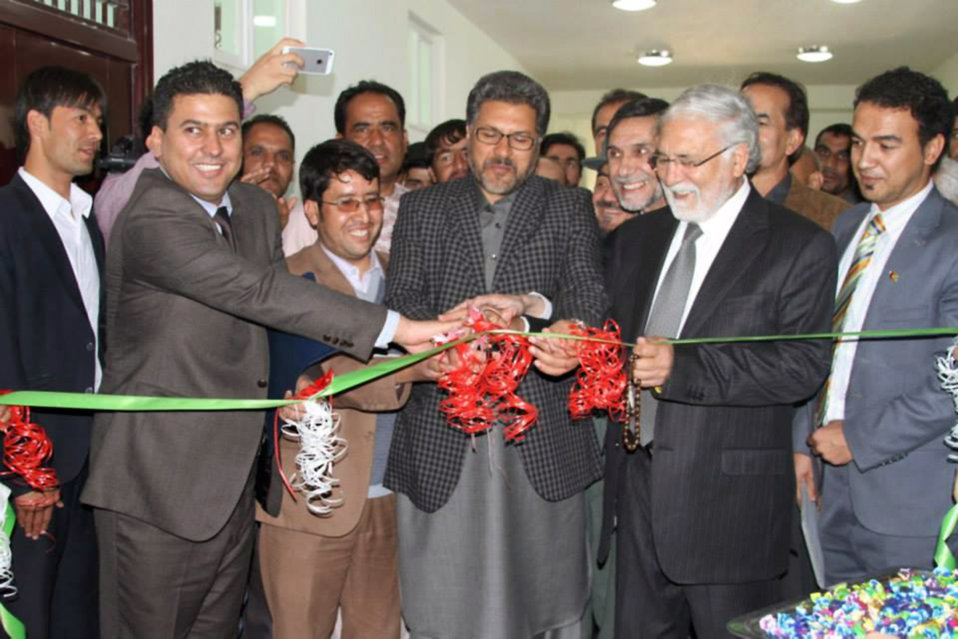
Herat Teacher Training Institute Inauguration

The ribbon cutting ceremony for the inauguration of the new teaching blocks held in Herat city was attended by Dr. Farooq Wardak – Minister Education, , Mr. Wahidi - Governor of Herat, Mr. Arwin Tahiri - Provincial Education Director, members of the provincial council, line directors of the Herat province, professors of the institute and students